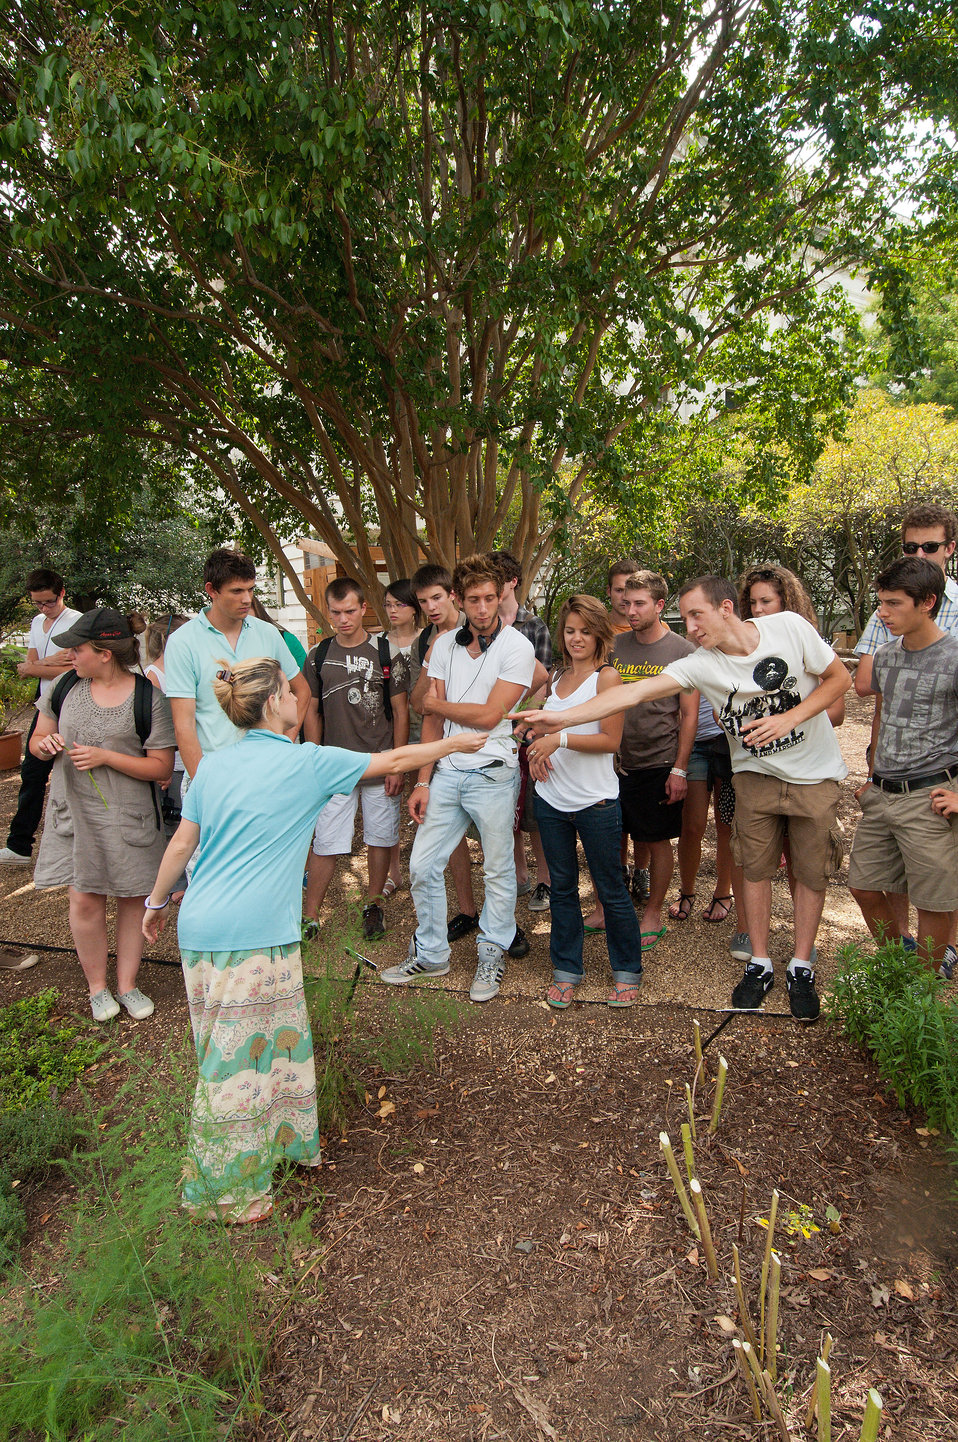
USDA People’s Garden, Outreach and Education Coordinator Annie Ceccarini (blue shirt) hands an asparagus frond to a student from Ecole Du Breuil, School of Horticulture and Landscaping Techniques of Paris, France. The students visited the United States Department of Agriculture People’s Garden in Washington, D.C., on Tuesday, September 4, 2012. The students are on a two-week U.S. tour, which includes a visit to the White House Kitchen garden, as well as gardens and parks in Washington, D.C. The students will also visit Temple University in Philadelphia, PA., in addition to parks and gardens in New York City where they will stay with host families and work on community gardens.